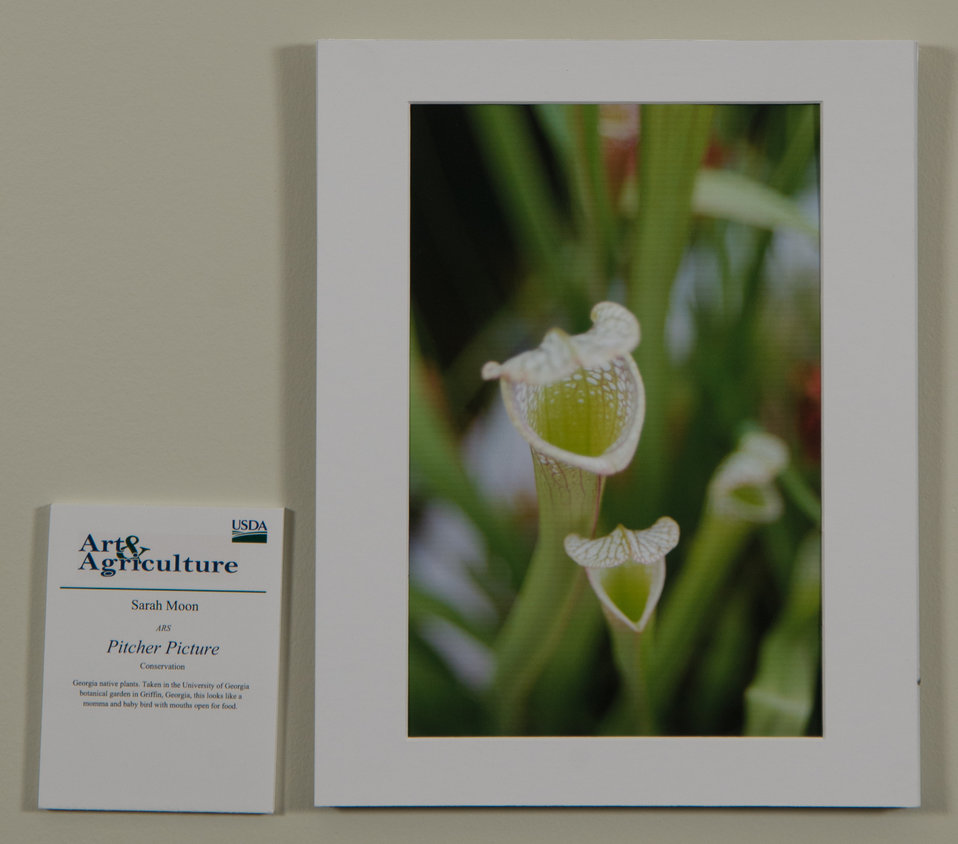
Online Viewer's Choice entries of the 2013 Art & Agriculture, Tuesday, July 9, 2013, in the South Building, Washington, D.C. Themes were expressed by employees from across the department and the contest was open to full-time and part-time USDA employees. Winning artwork will be displayed till the end of the year. U.S. Artistic expression is a creative outlet that is vital for an individual to grow and develop.